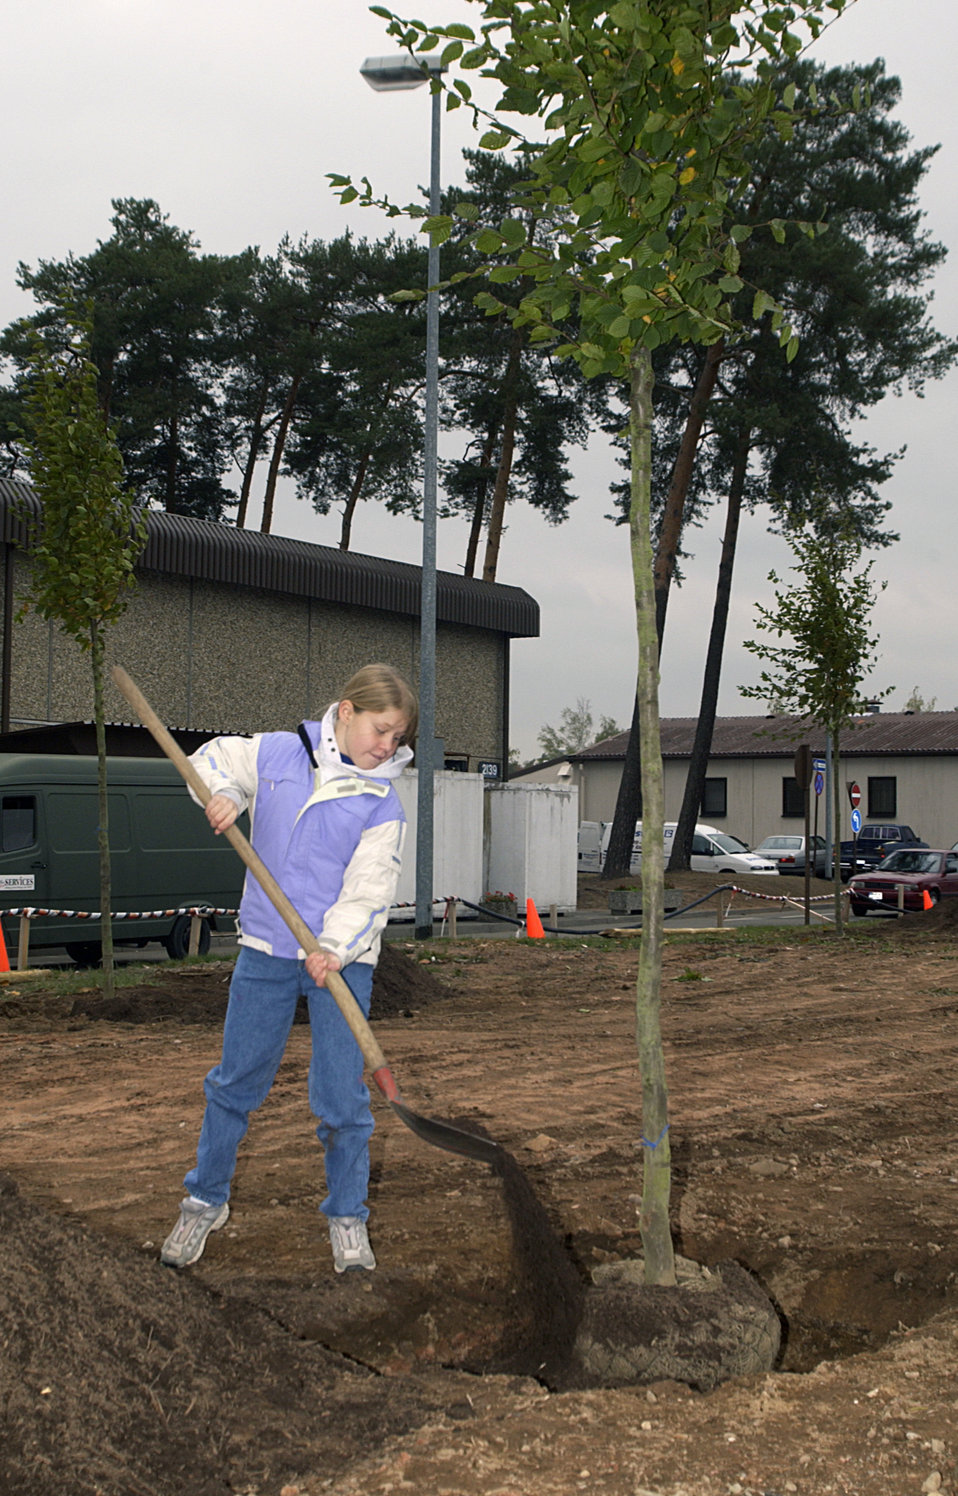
Tree planting

RAMSTEIN AIR BASE, Germany -- Sarah Engle plants a tree here in honor of Arbor Day 2003. She is a fifth-grade student at Ramstein Intermediate School.